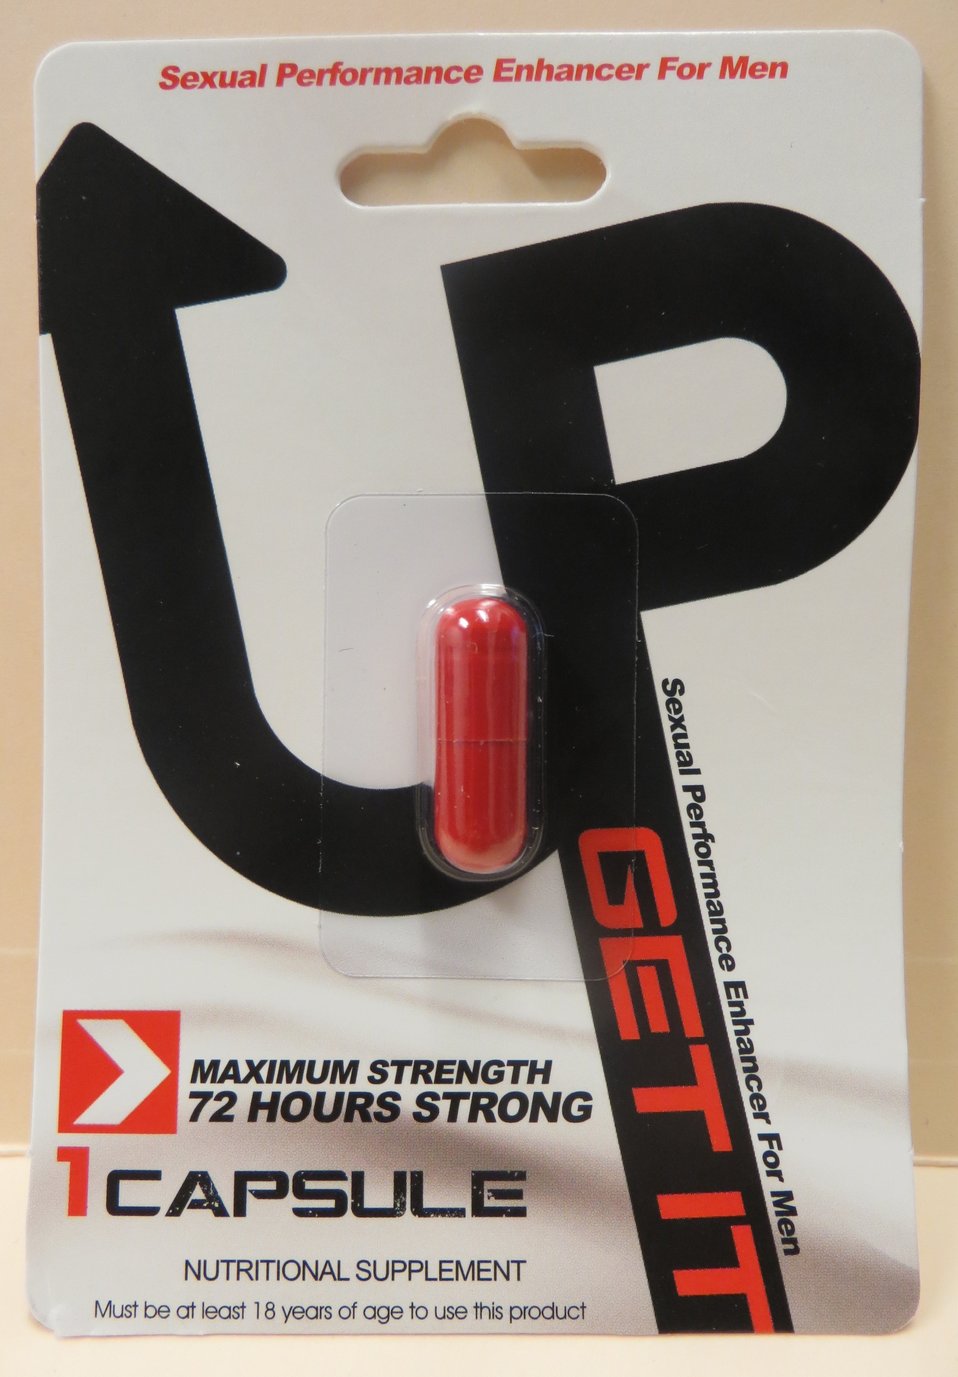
Get it Up

June 10, 2013 - The FDA is advising consumers not to purchase or use 'Get It Up,' a product promoted and sold for sexual enhancement. The product was found to contain undeclared sildenafil. For more information, go to www.fda.gov/Drugs/ResourcesForYou/Consumers/BuyingUsingMe...

And read this Consumer Update: Beware of Fraudulent ‘Dietary Supplements’